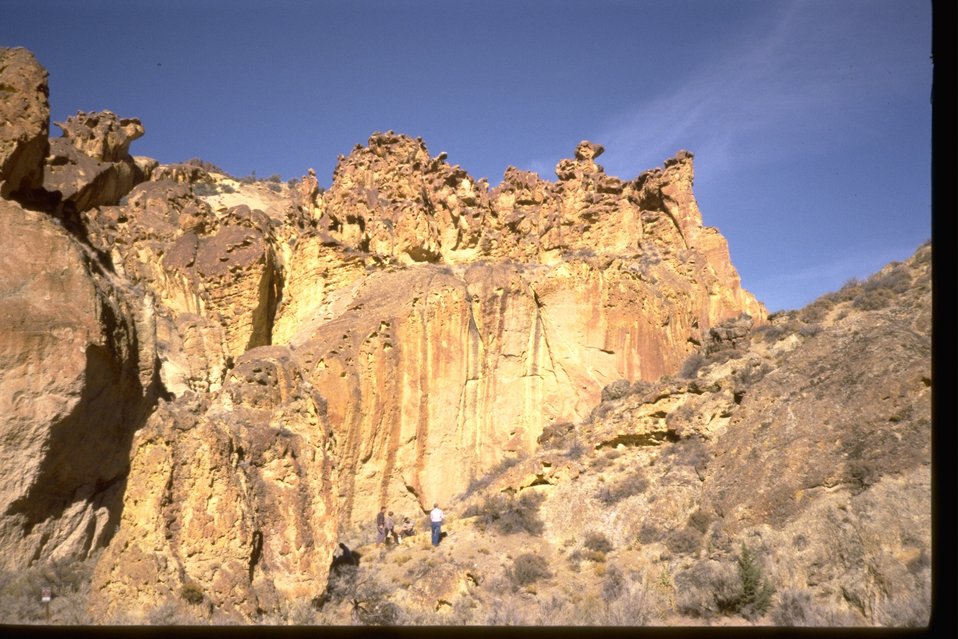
The South Bed of the Honeycombs Wilderness Study Area. OR 3-77A.